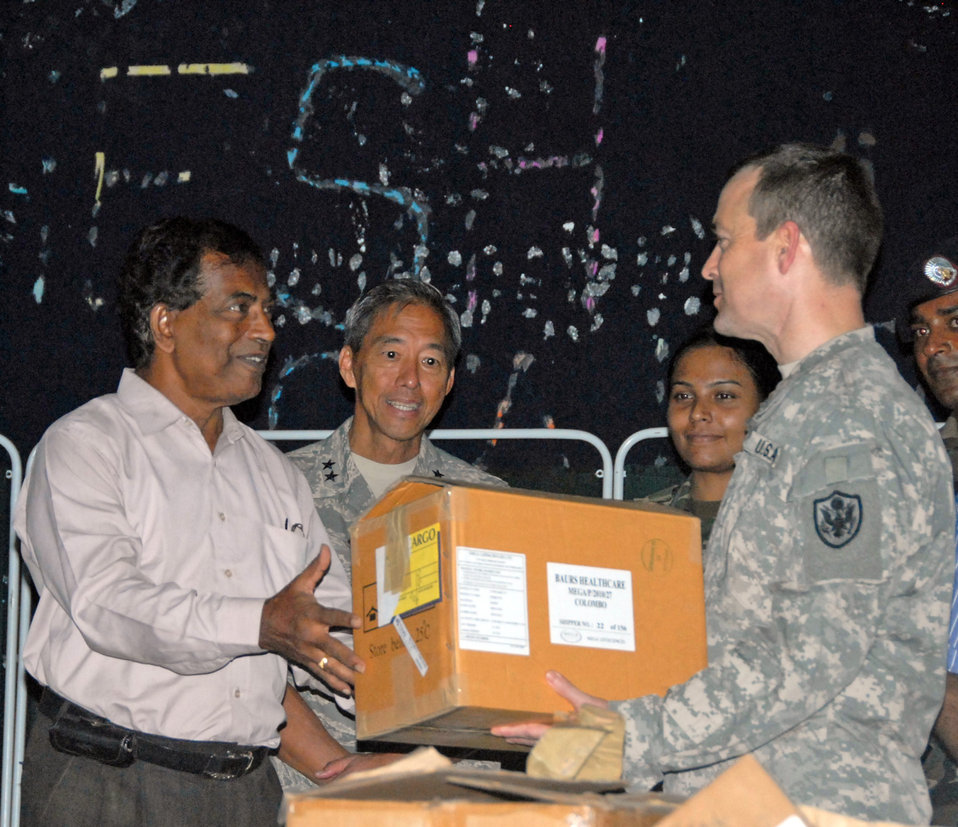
Operation Pacific Angel-Sri Lanka concludes

U.S. servicemembers participating in Operation Pacific Angel-Sri Lanka present Sri Lankan medical officials with donated medical supplies Aug. 21, 2010, at the conclusion of the Pacific Angel mission. More than 40 representatives from the Air Force, Army, Navy, Marines Corps and American public health service practitioners participated in the humanitarian effort.